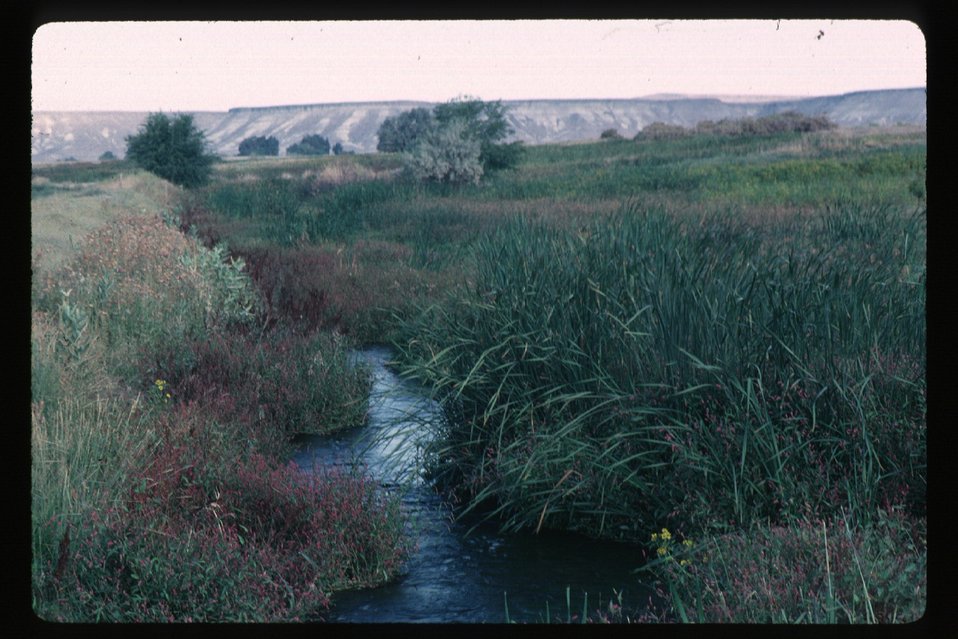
Riparian Shoshone Field Office Silver Creek